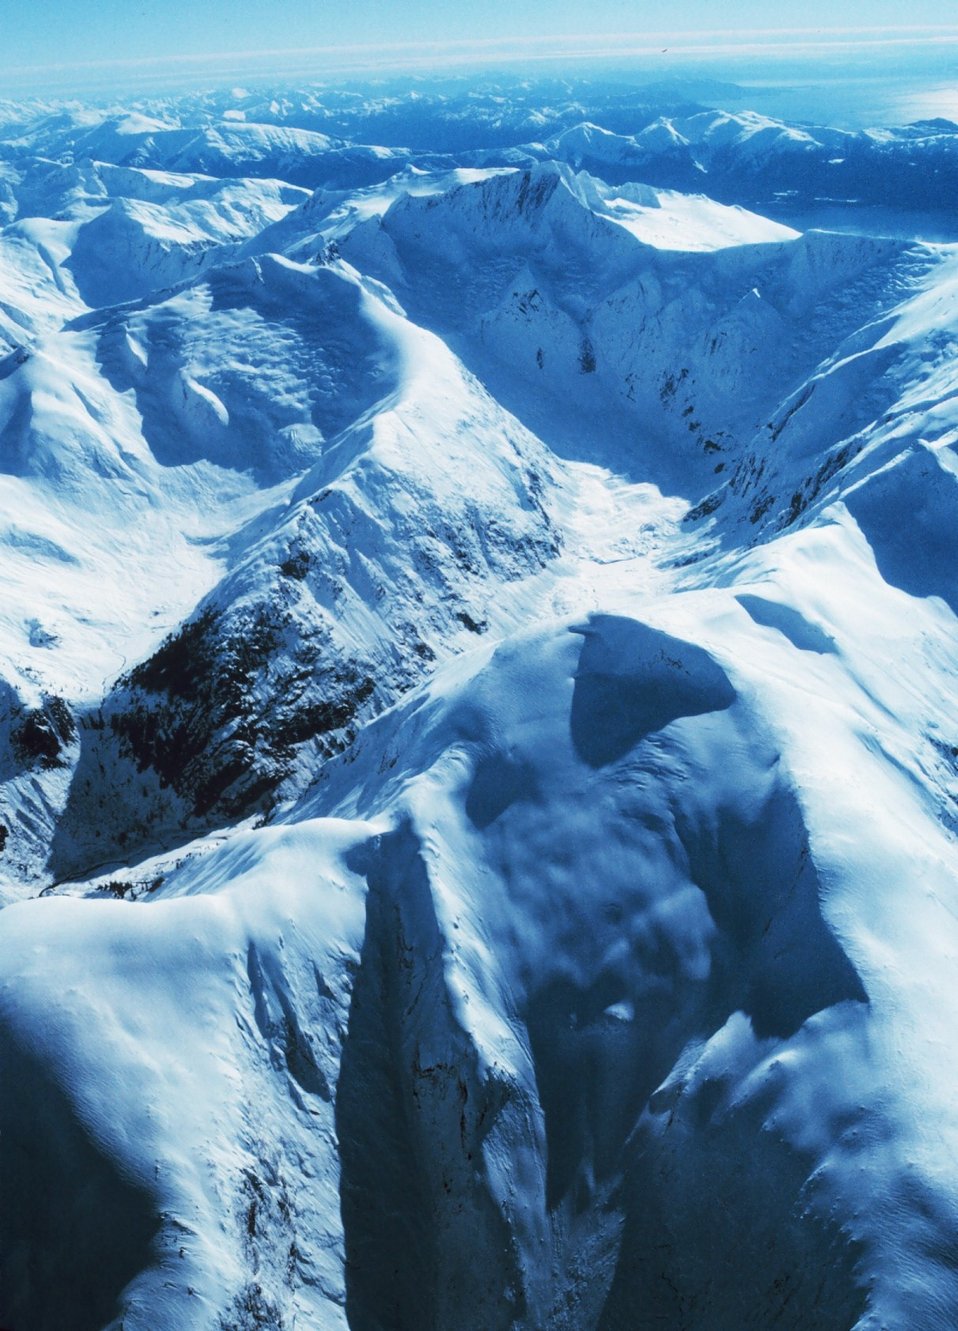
Seemingly endless mountains and snow between Petersburg and Juneau